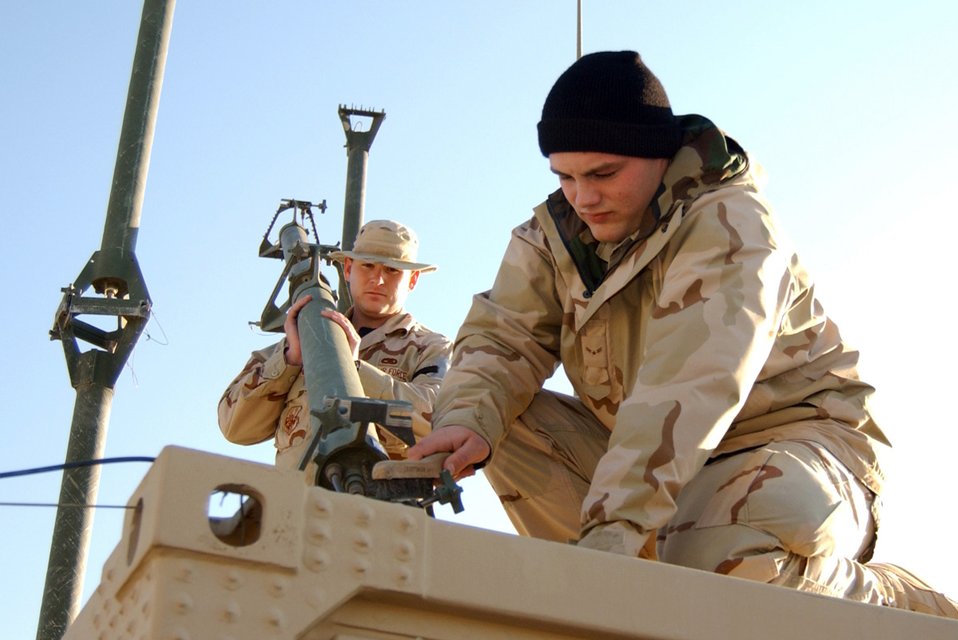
Antenna cleaning

BALAD AIR BASE, Iraq (AFPN) -- Senior Airman Gil Stephens, left, holds an antenna as Airman 1st Class Sam Hauptly cleans it. Both Airmen are deployed to the 727th Expeditionary Air Control Squadron as ground radio technicians.